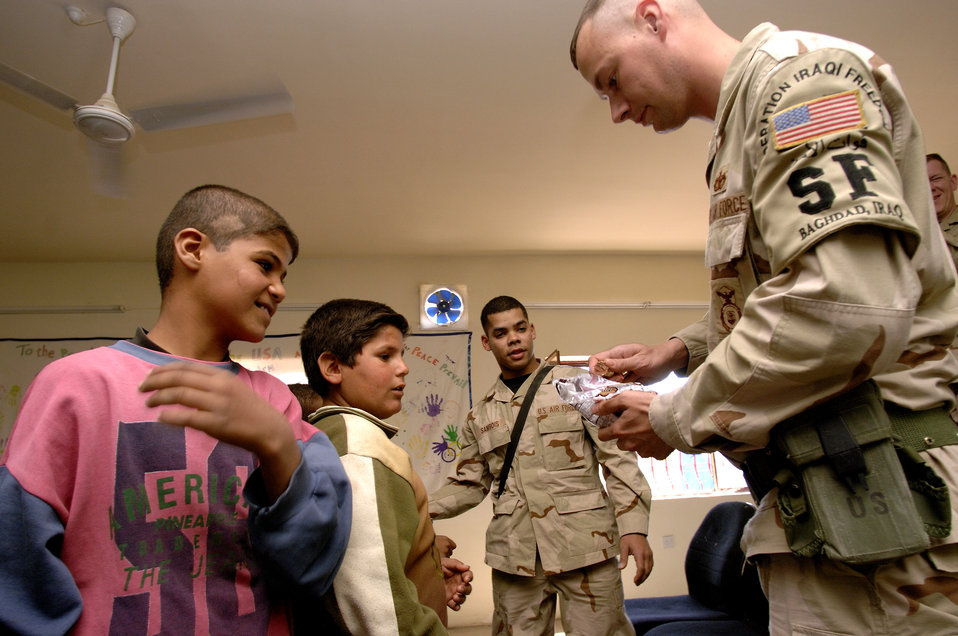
Medics, volunteers meet Iraqis' medical needs

Staff Sgt. Brian Newton (right) and Senior Airman Argenis Sambois entertain children waiting to see a medic at the Radhwaniya Medical Clinic Outreach Program. Several times a week, volunteers meet at the facility on the edge of the Baghdad International Airport area and support the medical needs of civilians.